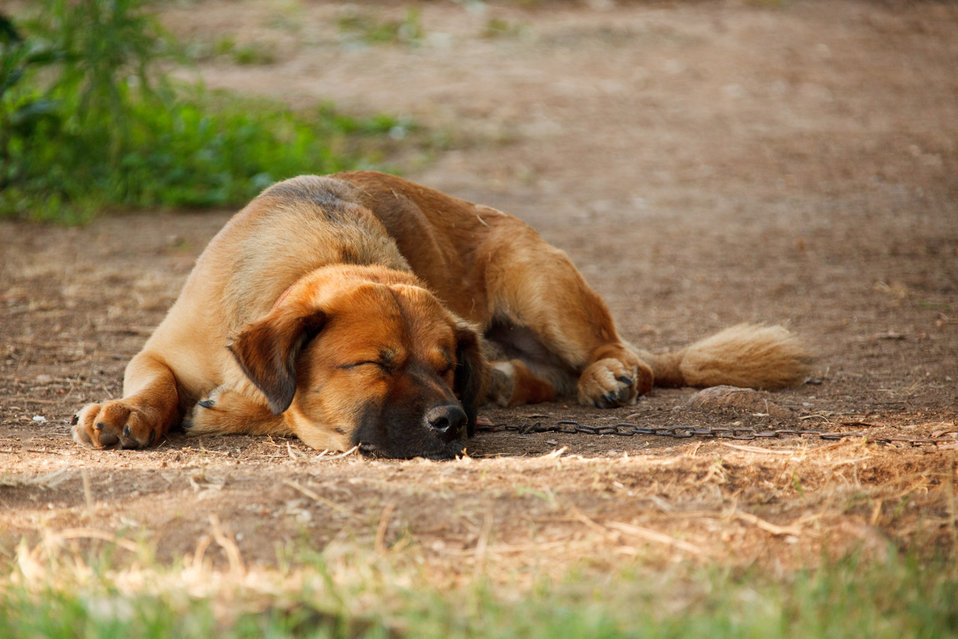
Sleeping dog

Cute dog sleeping on the floor.